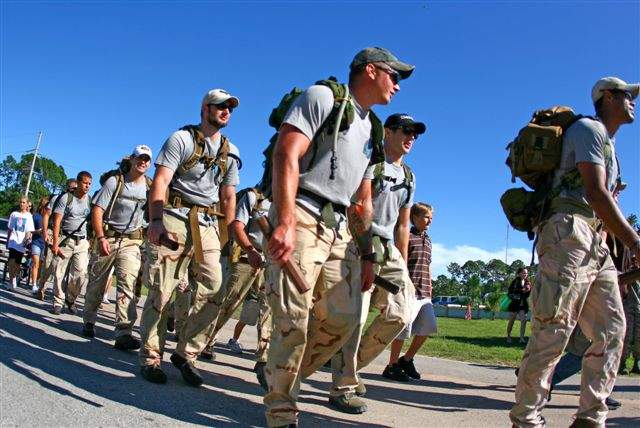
Brothers in arms march for cause

Twelve special tactics Airmen conclude an 824-mile memorial rucksack march Oct. 16, 2009, at Hurlburt Field, Fla. The men marched from Lackland Air Force Base, Texas, to Hurlburt Field to honor Staff Sgt. Timothy Davis, a combat controller assigned to the 23rd Special Tactics Squadron when Field when he was killed in action Feb. 20, 2009, and 12 other fallen special operations forces members.